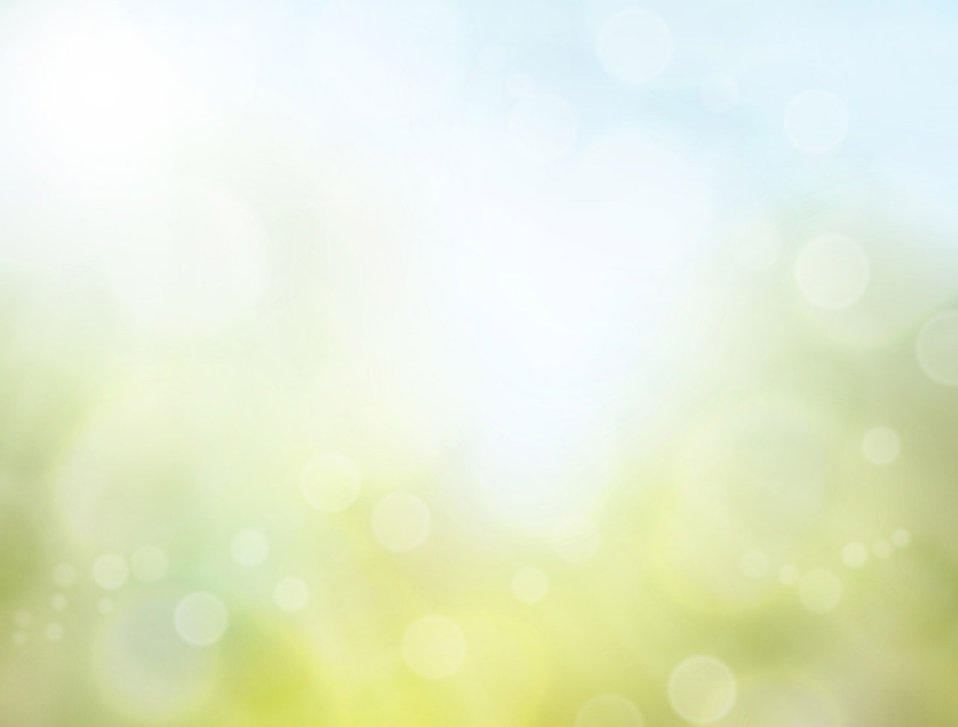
Fresh spring background

Fresh green and blue bright background with bokeh effect.